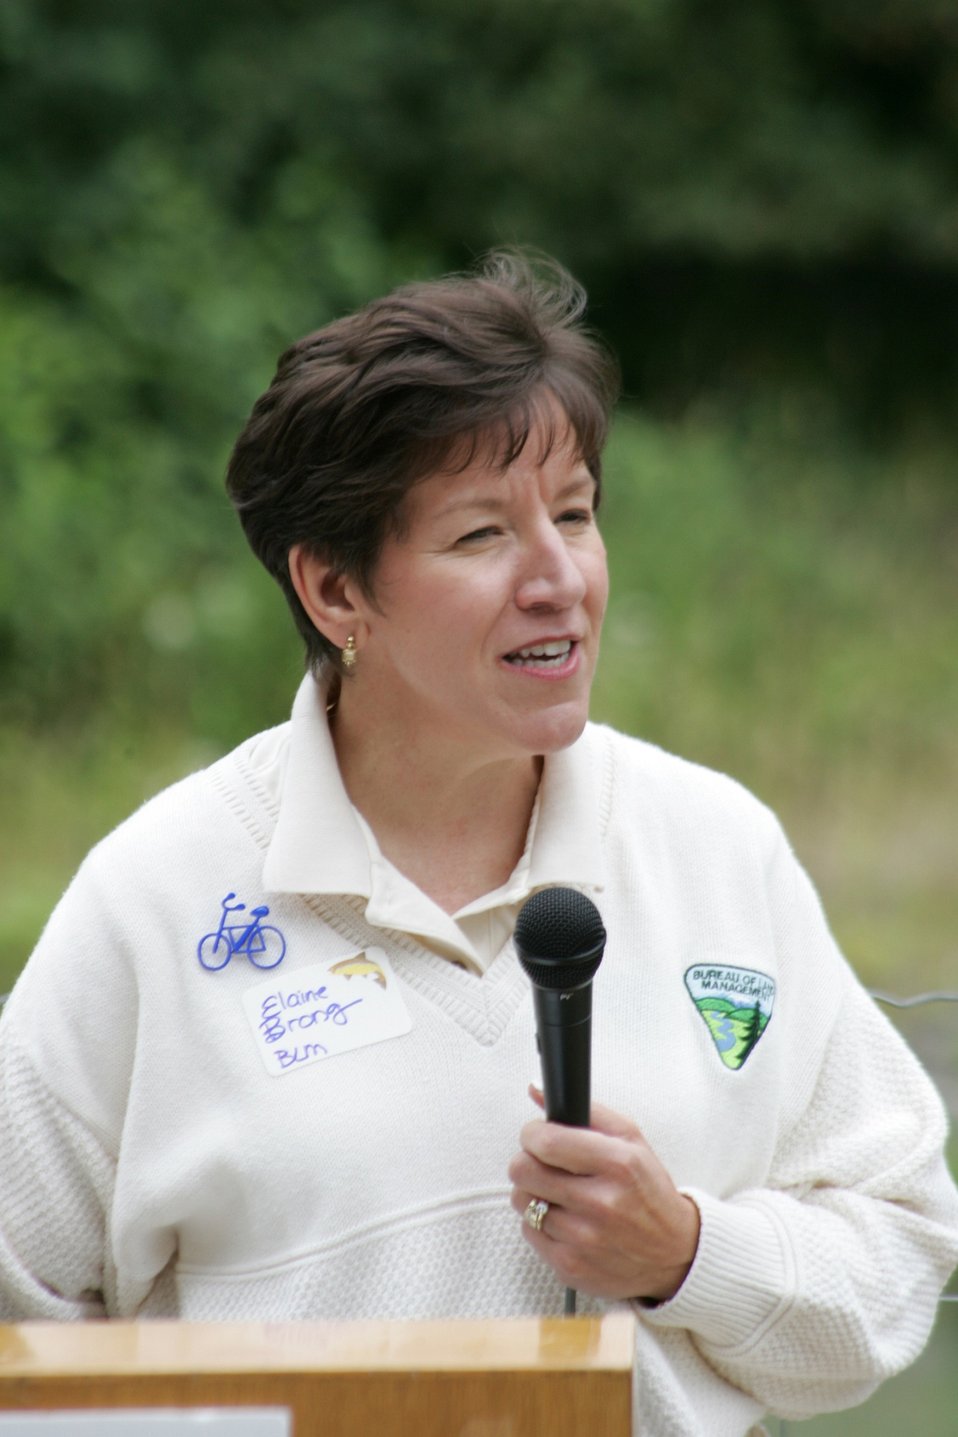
Elaine Brong, BLM State Director for Oregon, speaks during the Four C's Award ceremony at the Little Sandy Dam. The award was presented by Kathleen Clarke, BLM Direcgor, to PGE and the Western River Conservancy.